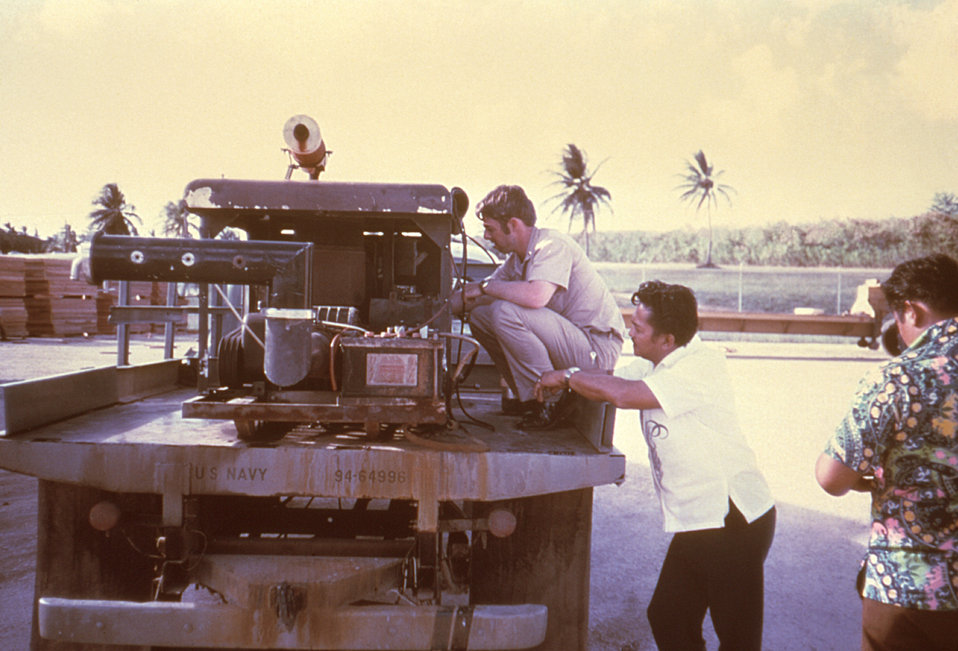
This was an experimental cold fog generator that employed three nozzles through which it delivered an insecticidal fog.